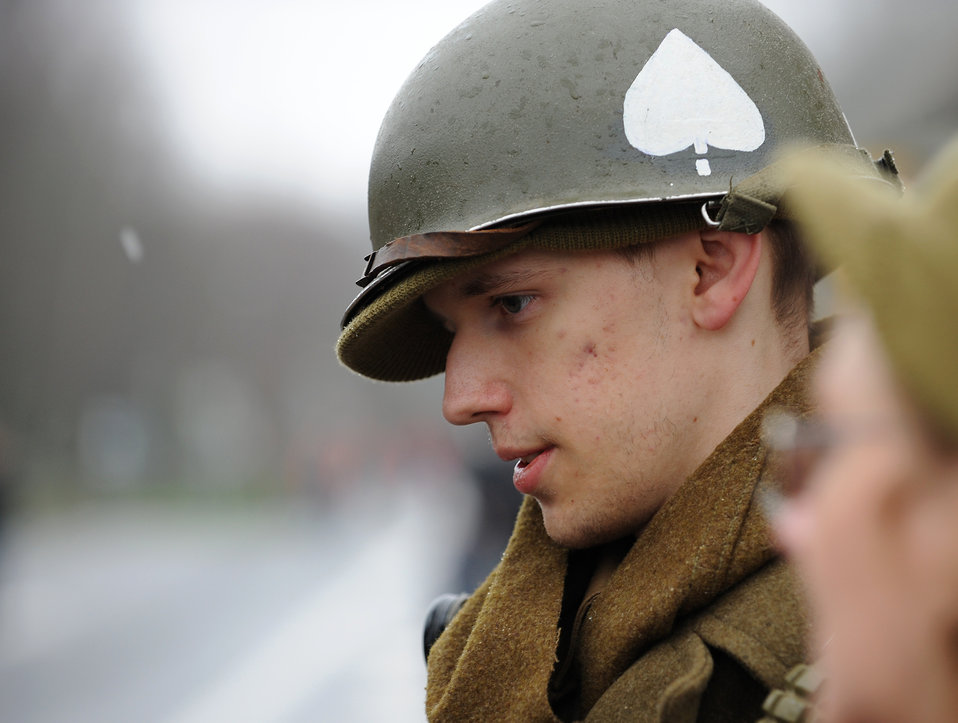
Airmen participate in 32nd Annual Bastogne Historic Walk

Francois Gryson, from Charleroi, Belgium, takes a break Dec. 12, 2009, during the 32nd Bastogne Historic Walk in Bastogne, Belguim. The walk commemorated the 65th anniversary of the liberation of Bastogne and the Battle of the Bulge.